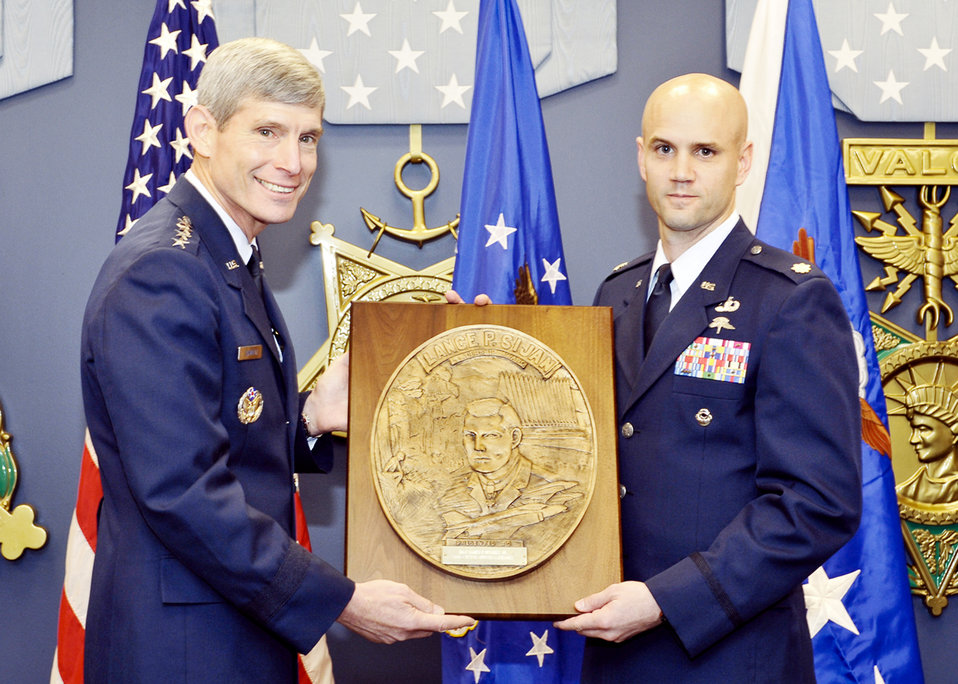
Sijan Award

Air Force Chief of Staff Gen. Norton Schwartz presents the Capt. Lance P Sijan Air Force Leadership Award to Maj. James Hughes Jr., Nov. 18, 2009. The Sijan Award recognizes the accomplishments of officer and enlisted Airmen who have demonstrated the highest qualities of leadership in the performance of their duties and the conduct of their lives.